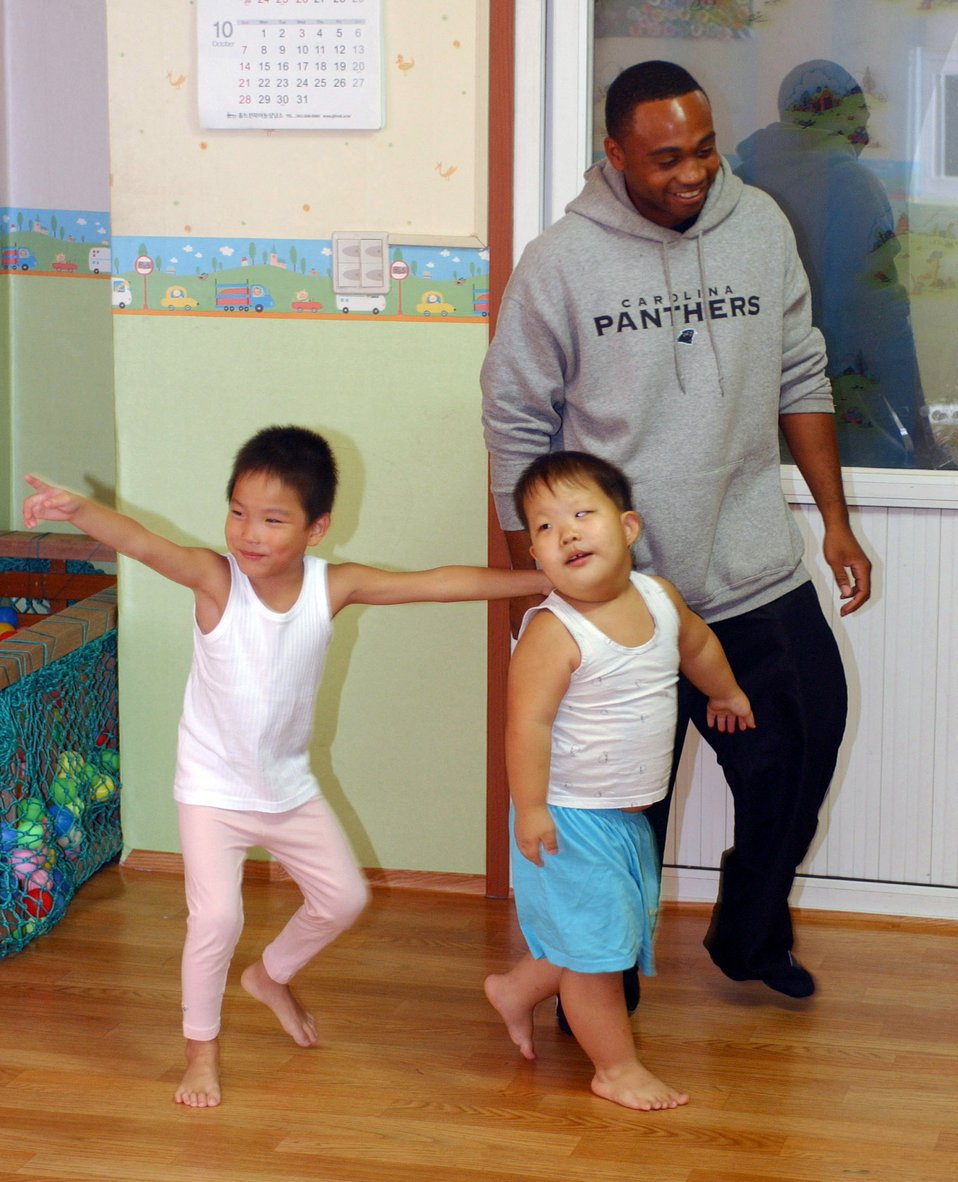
Good neighbors

Senior Airman Gary Mallard plays with children at the Gunsan Orphanage Sept. 5 at Gunsan City, South Korea. Members of the 8th Logistics Readiness Squadron volunteered at the Kunsan Air Base Commissary in South Korea to raise money for the children at the Gunsan Orphanage as part of a Good Neighbor Program initiative. After presenting the money, they spent time with the children. Airman Mallard is assigned to the 8th Logistics Readiness Squadron.